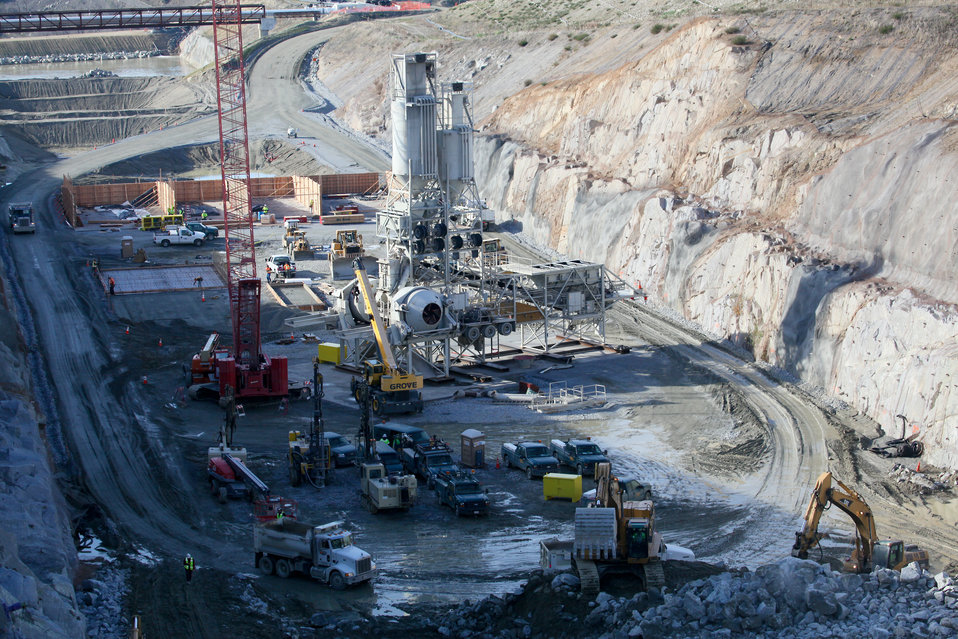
Concrete mixing equipment moves into the Folsom Dam auxiliary spillway

Workers complete the first stage of installing concrete mixing equipment for the new Folsom Dam auxiliary spillway in Folsom, Calif., Jan. 25, 2012. Paving is scheduled to begin in May, said U.S. Army Corps of Engineers Sacramento District project engineer Larry Smith. The spillway will allow Folsom Dam to release water sooner and more safely. The project is part of the Folsom Dam Joint Federal Project, a joint effort of the U.S. Army Corps of Engineers Sacramento District, the U.S. Bureau of Reclamation, the Central Valley Flood Protection Board and the Sacramento Area Flood Control Agency to improve the safety of the dam and reduce flood risk for the greater Sacramento area.